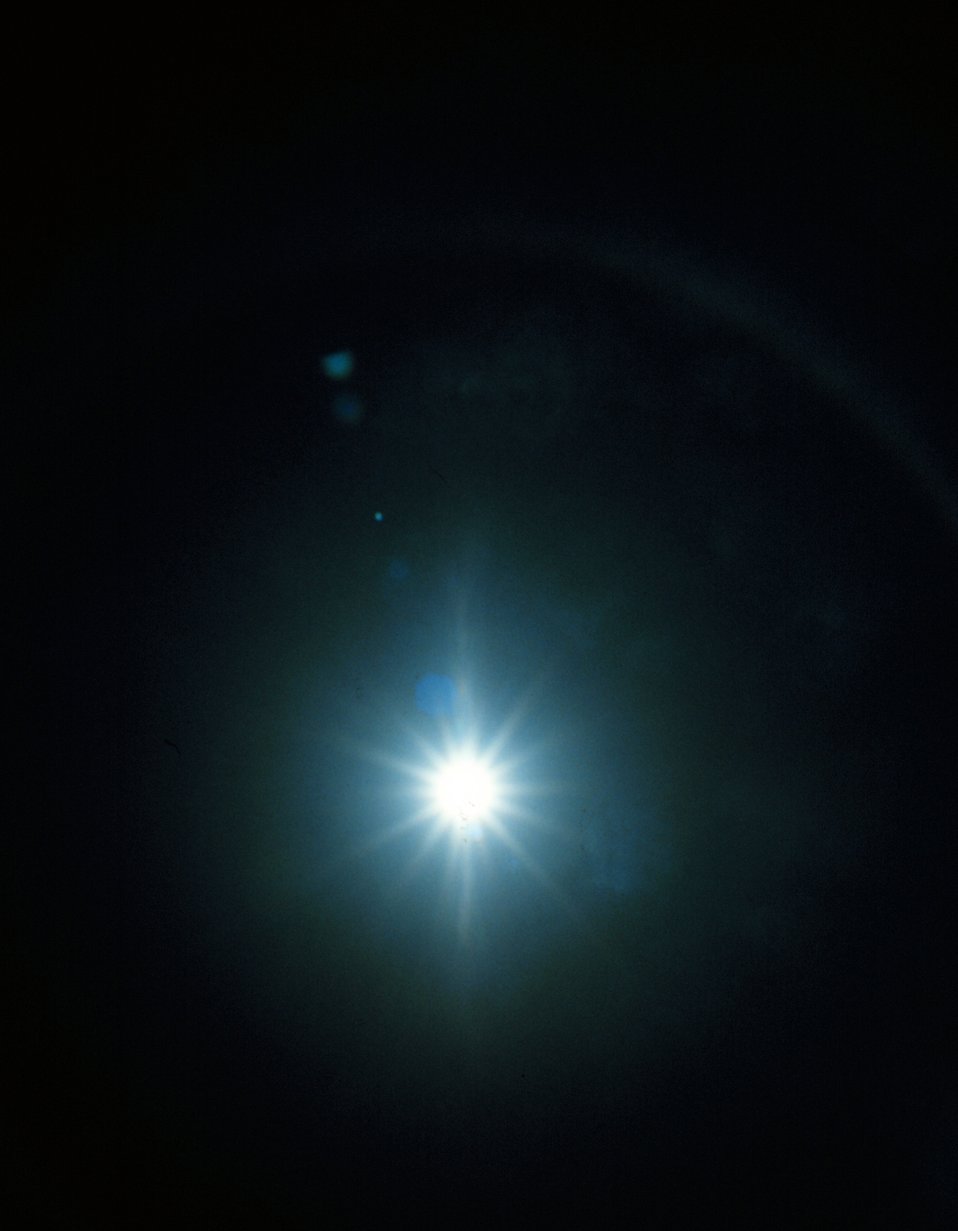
Halo